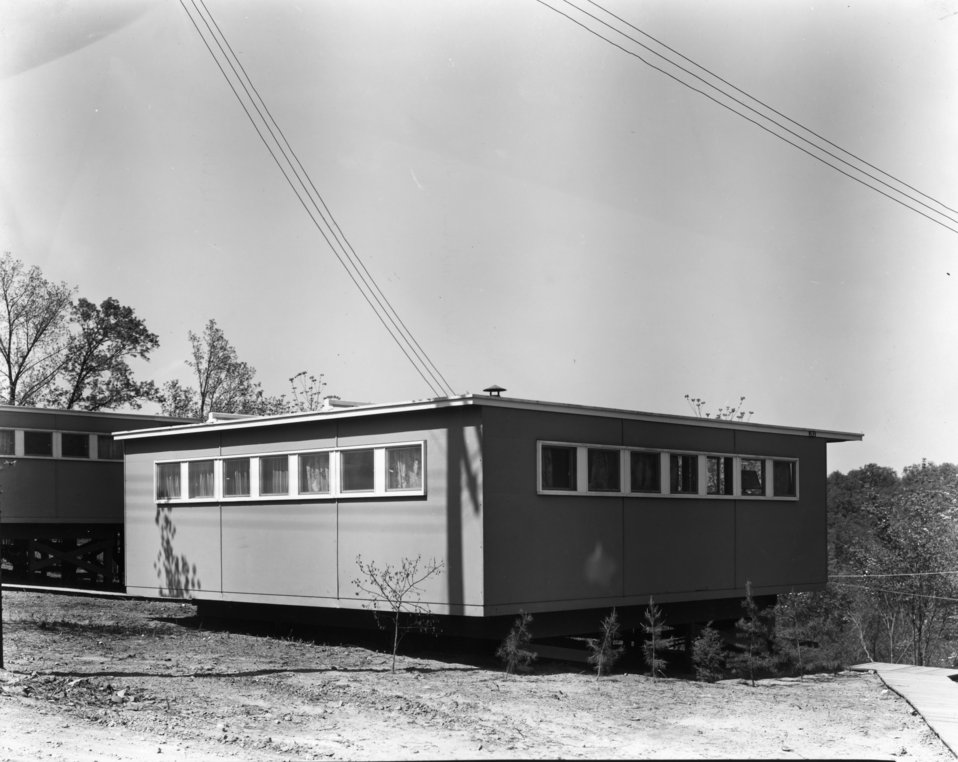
Housing at Oak Ridge